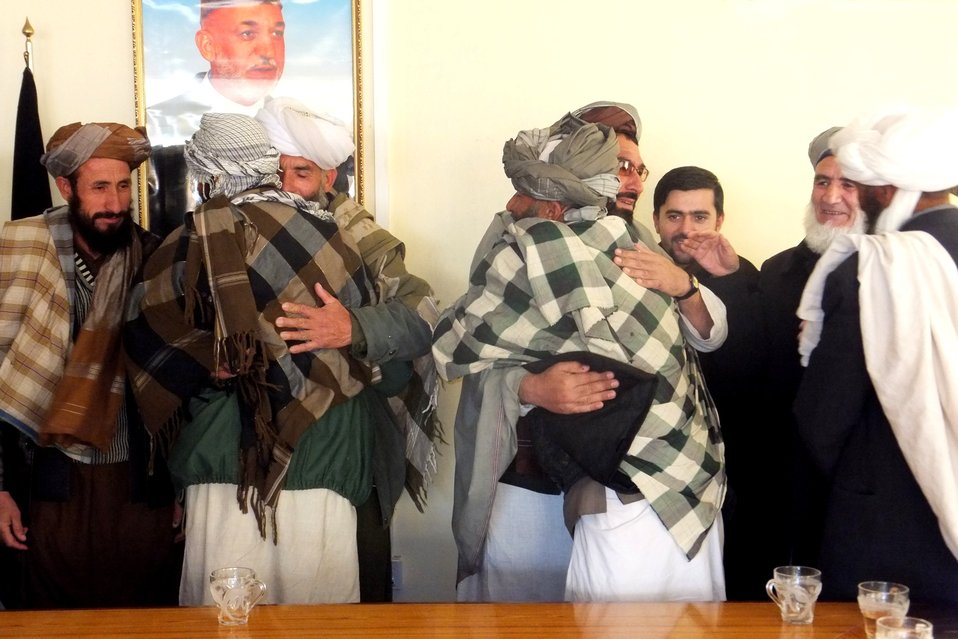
The Taimnai Tribes representatives embraced and agreed that they would stop creating problems.